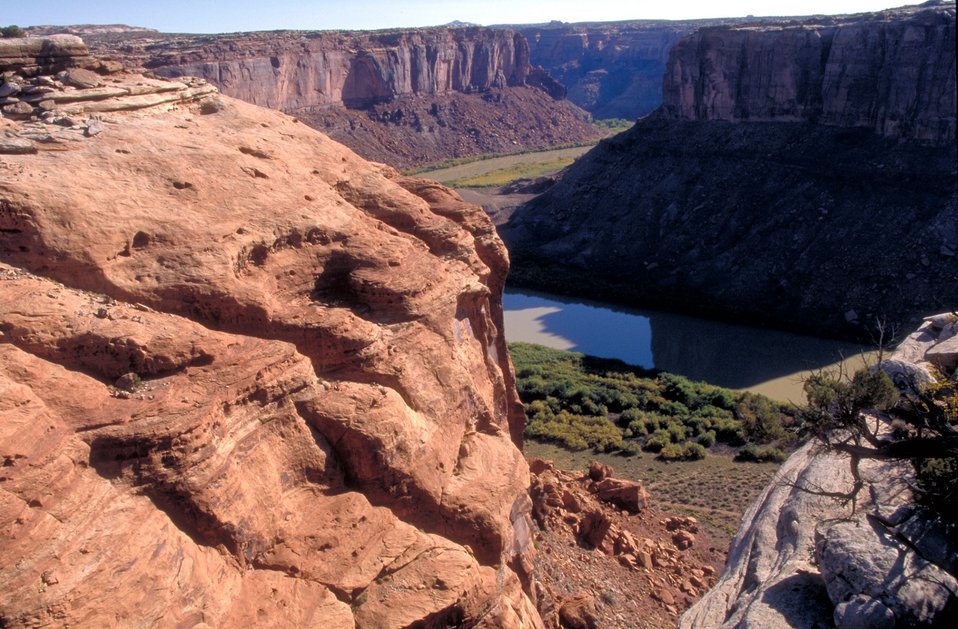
Green River near Bowknot Bend, Moab, Utah.